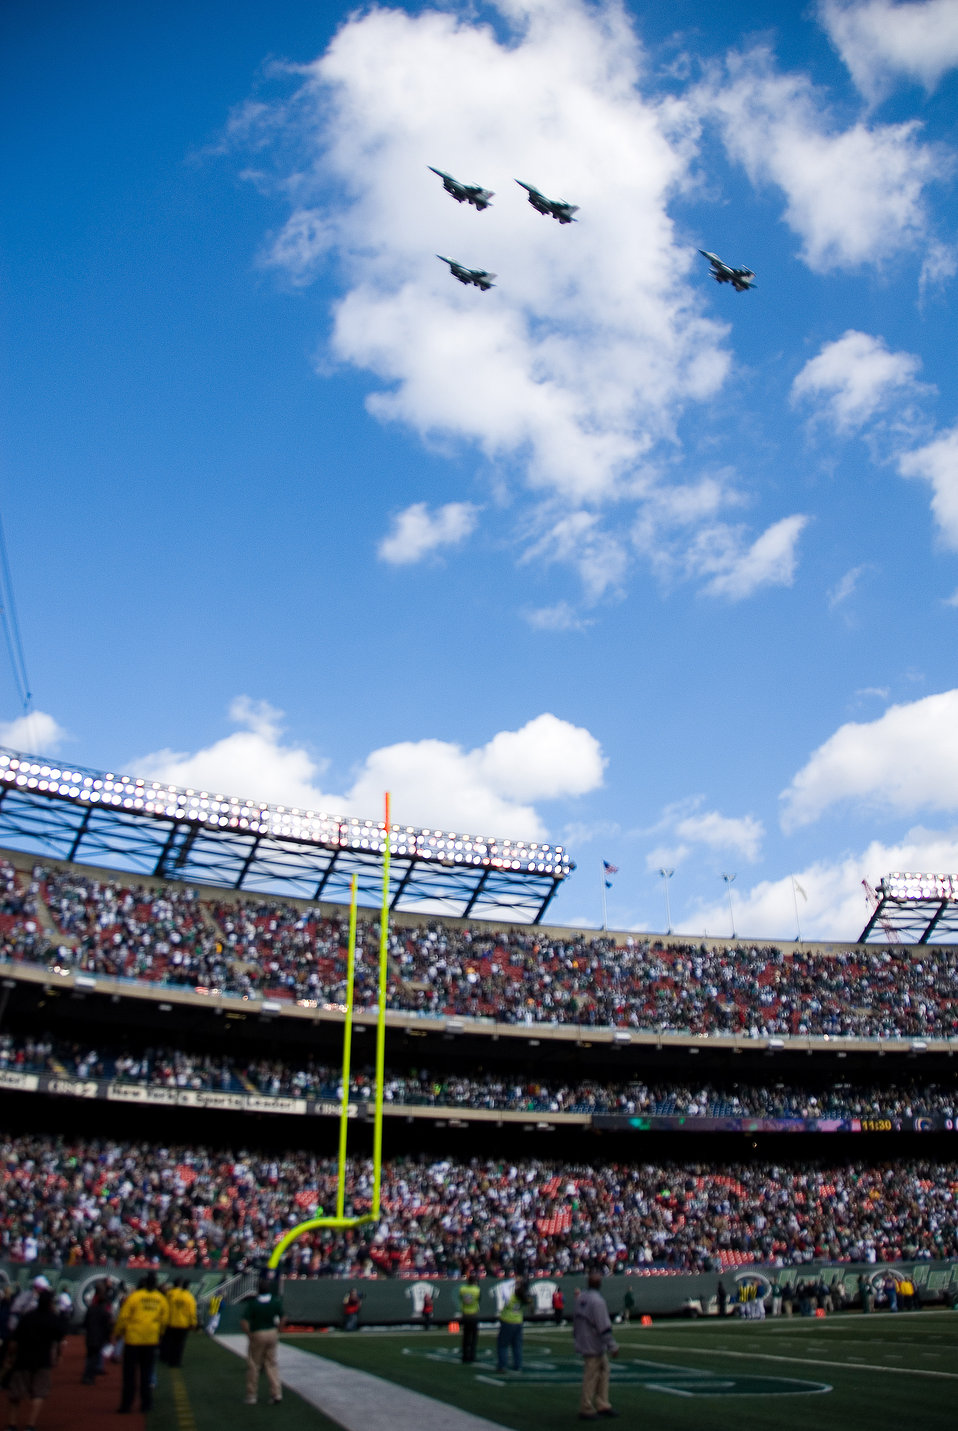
Military Appreciation Day at Meadowlands Stadium, NJ

Pilots from the New Jersey Air National Guard's 177th Fighter Wing flew a formation of four F-16 Fighting Falcons over Meadowlands Stadium during the New York Jets military appreciation football game Nov. 9.